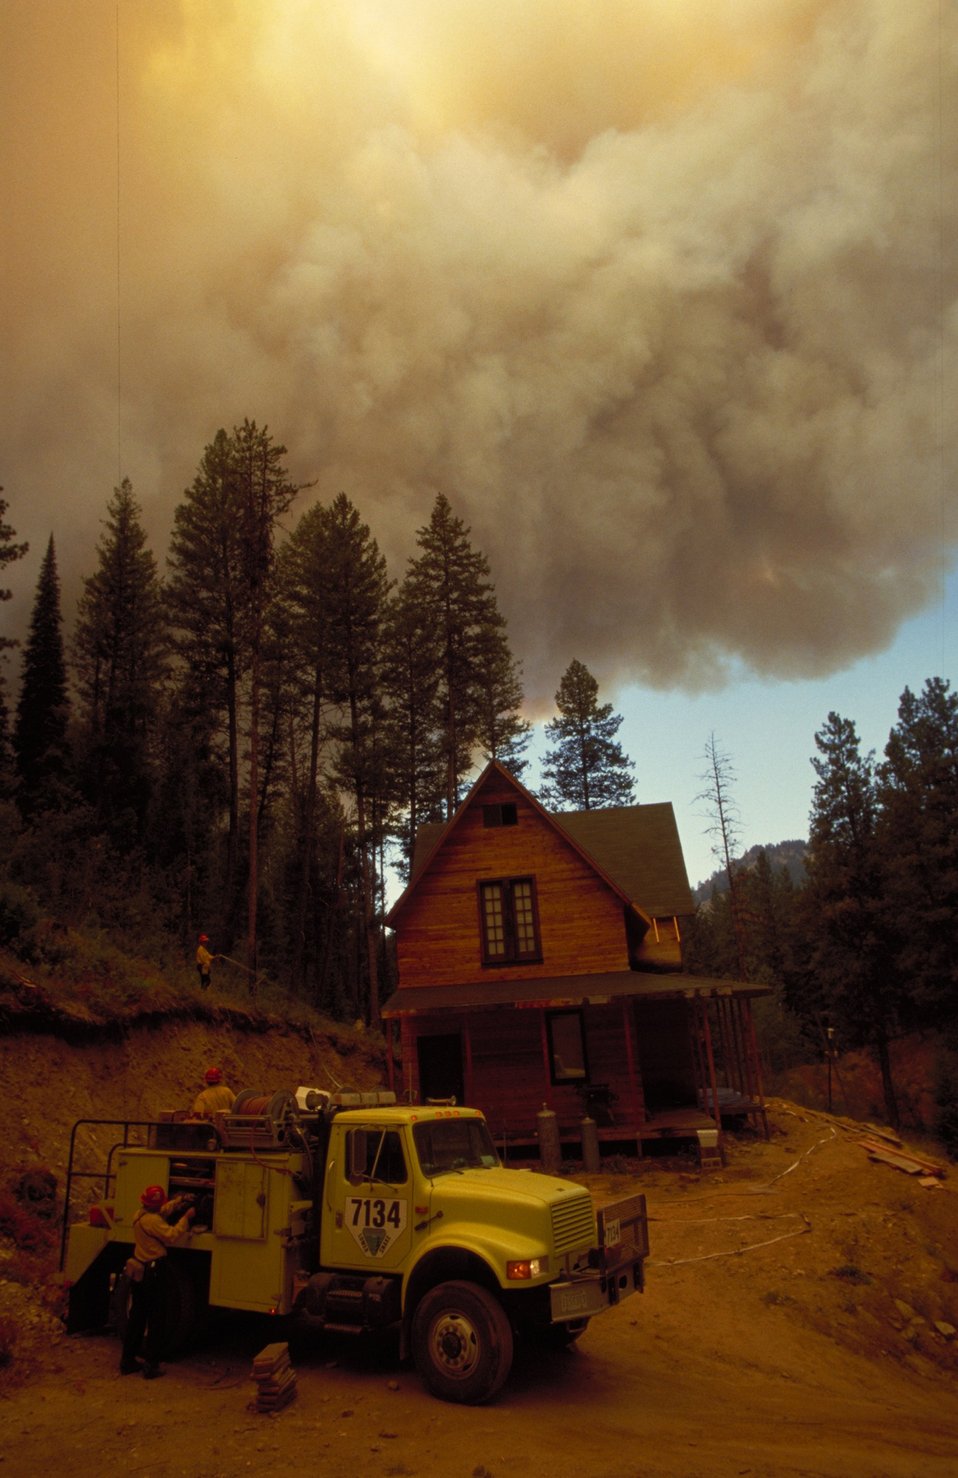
Urban interface Heavy engine Fire Season 2000 Lower Snake River District LSRD